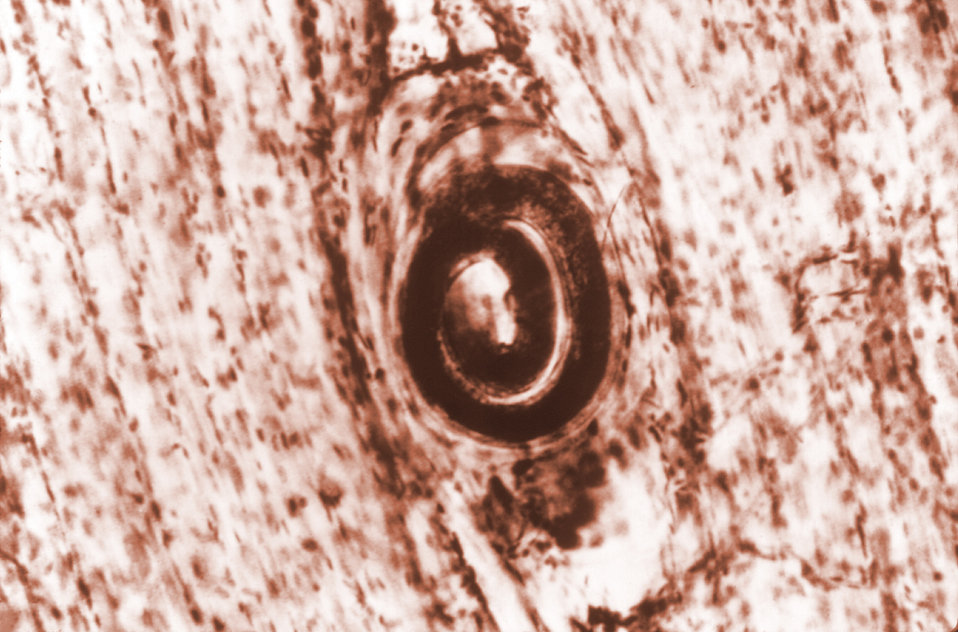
This is a photomicrograph depicting a Trichinella spiralis cyst seen embedded in a muscle tissue specimen, in a case of trichinellosis.Trichinellosis is acquired by ingesting meat containing cysts (encysted larvae) of Trichinella sp. roundworm (nematode) parasites.